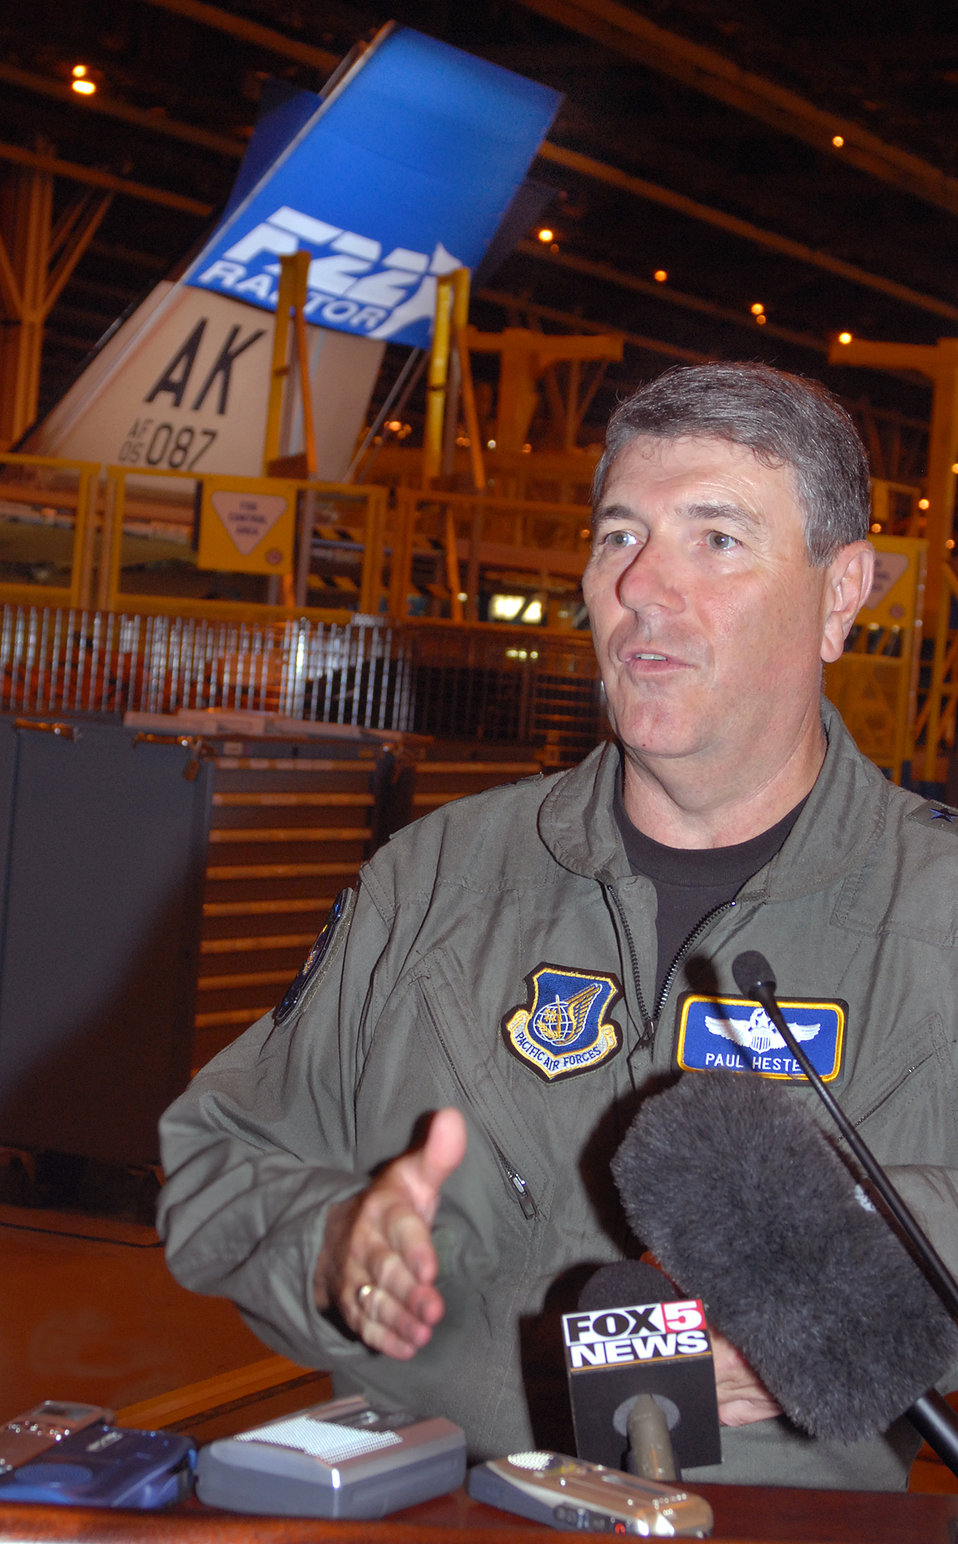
PACAF unveils first F-22

Gen. Paul Hester, Pacific Air Forces commander, takes questions from the media following an unveiling ceremony Aug 3 at the Lockheed Plant in Marietta, Ga., for an F-22 Raptor being assigned to PACAF The aircraft, which is still under construction, will be the first of 36 F-22s assigned to Elmendorf Air Force Base, Alaska, beginning next year.